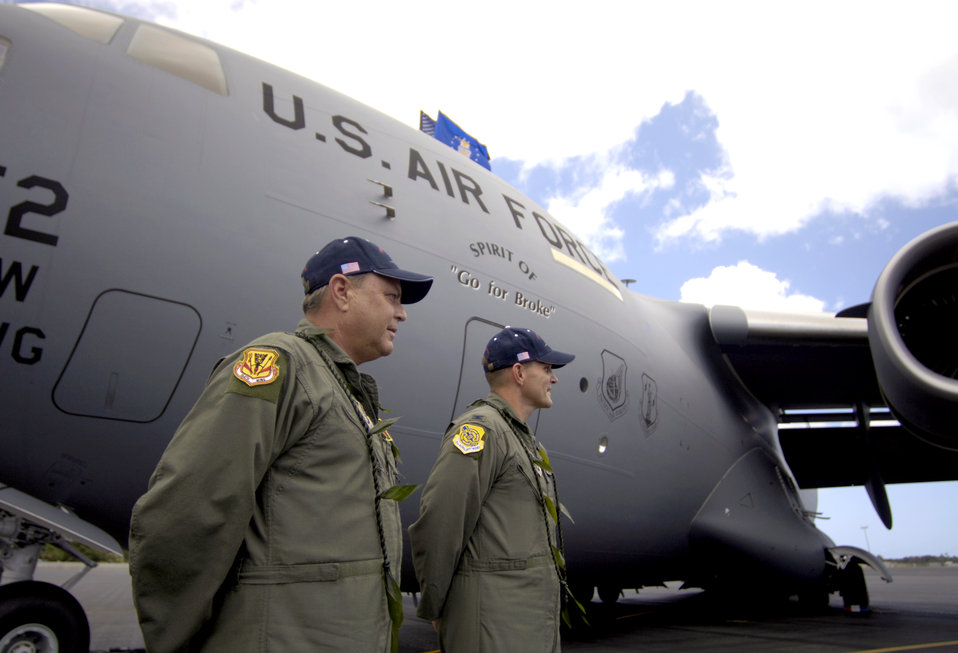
Hickam honors World War II vets with new C-17

Brig. Gen. Peter S. Pauling and Col. William Changose listen to the blessing of a C-17 Globemaster III during its arrival ceremony at Hickam Air Force Base, Hawaii, on Wednesday, June 14. The aircraft